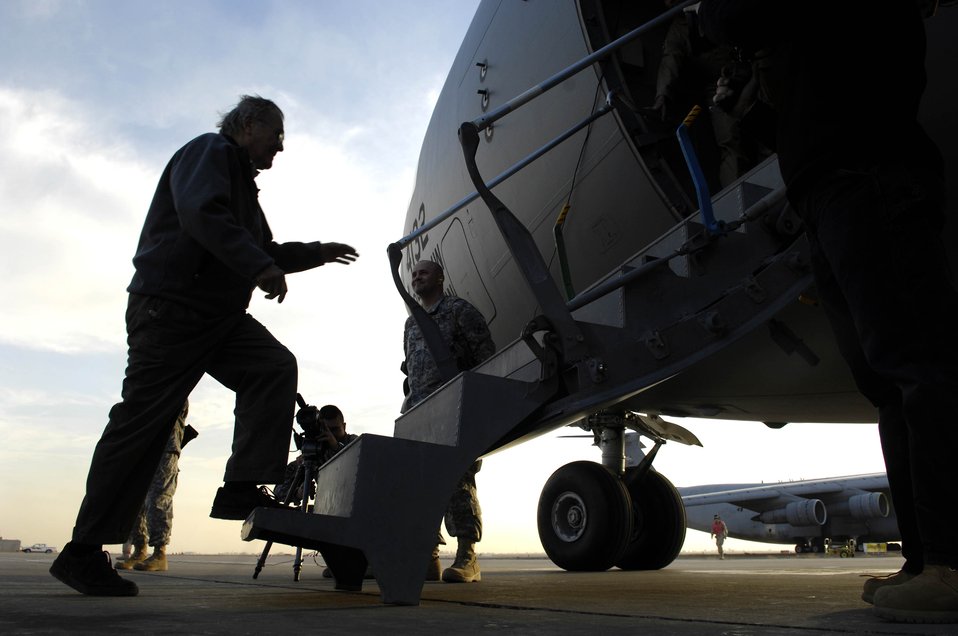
Operation Iraqi Freedom

Secretary of Defense Donald H. Rumsfeld boards a U.S. Air Force C-17 Globemaster III aircraft after a surprise visit with servicemembers Dec. 9 at Balad Air Base, Iraq.